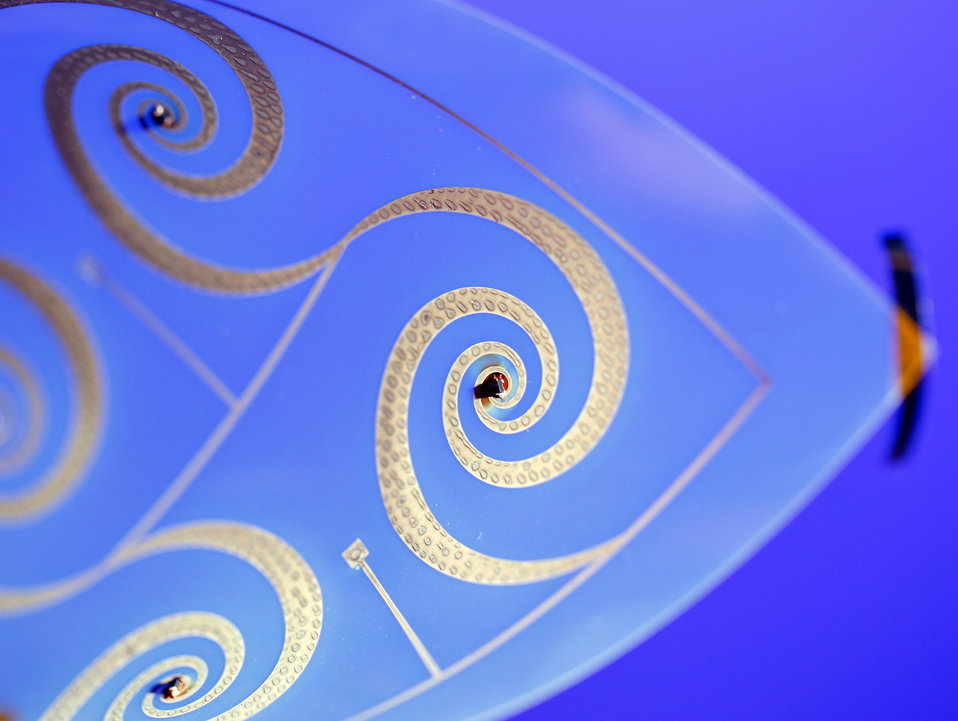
Printed, flexible electronics using roll-to-roll processing technology at the Manufacturing Demonstration Facility at Oak Ridge National Laboratory.